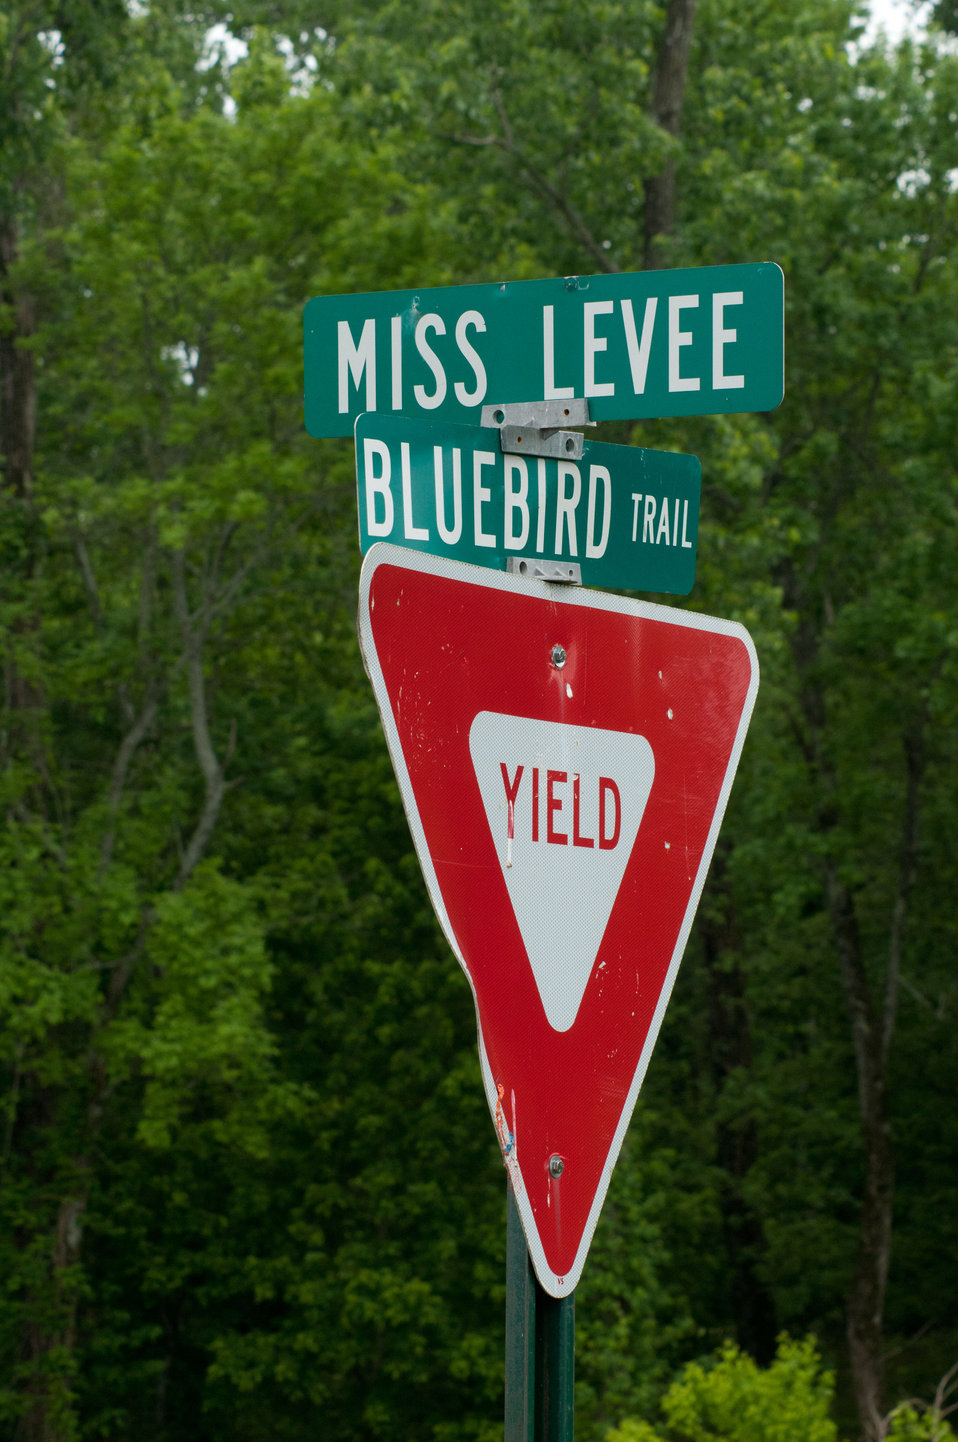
Floods waters from Mississippi River inundated Tunica Cutout, MS on Sunday, May 15. 2011. The entire population was relocated nearby to the protected side of the levee.